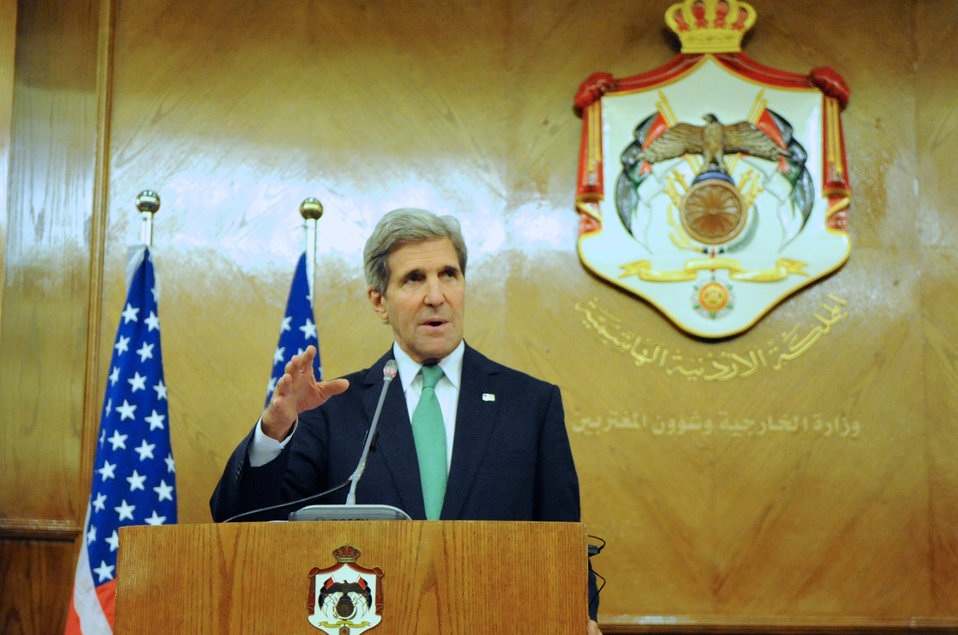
Secretary Kerry Discusses Middle East Issues in a News Conference

U.S. Secretary of State John Kerry addresses reporters during a joint news conference with Jordanian Foreign Minister Nasser Judeh following a meeting focused on Middle East issues in Amman, Jordan, on November 7, 2013.